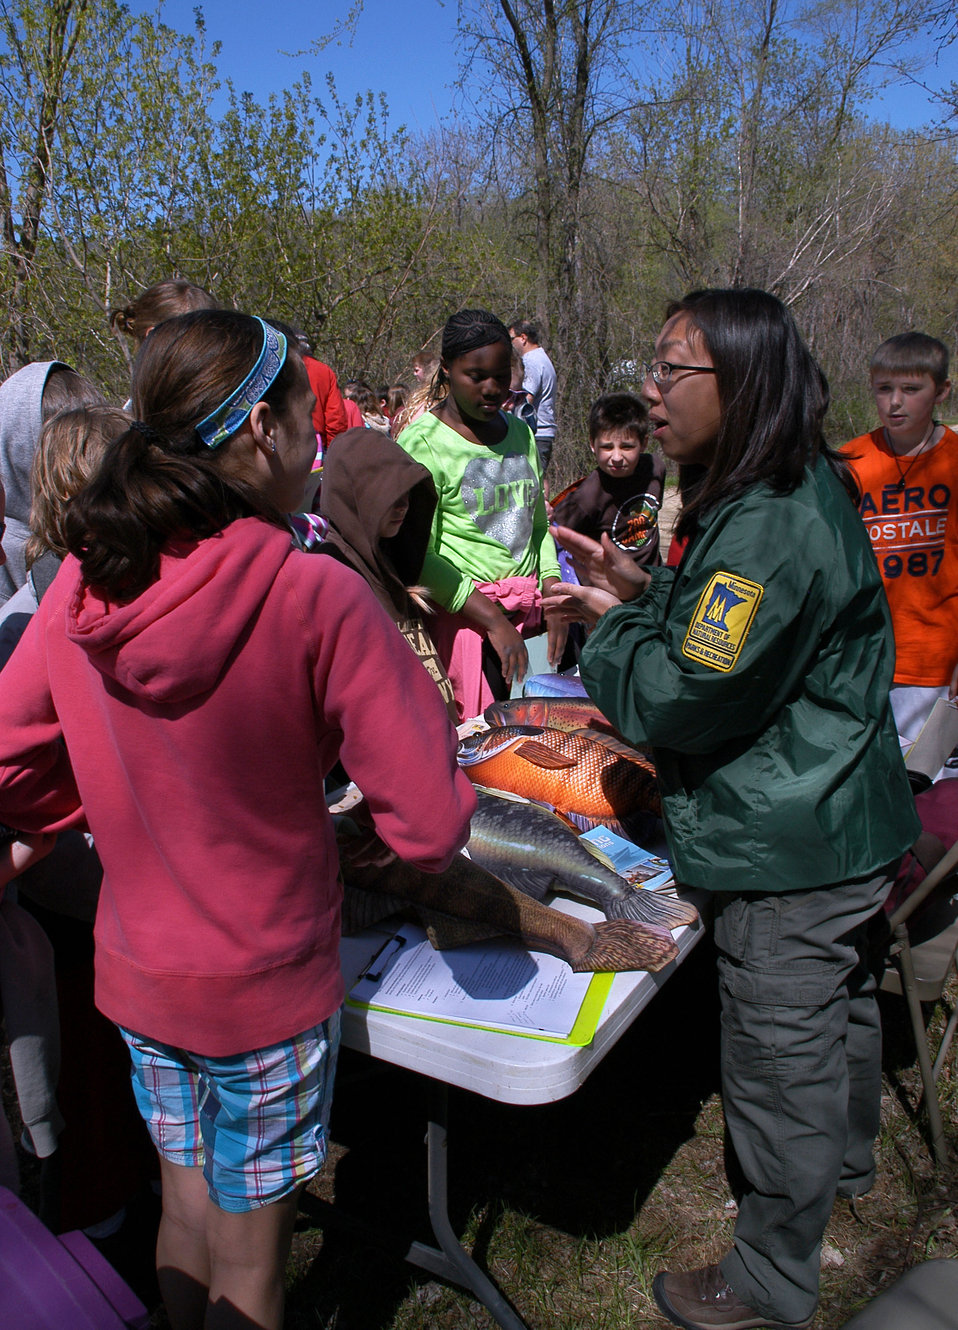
Environmental Interpreter, Krista Jensen, from the MN DNR taught Fish Identification

Students gathered around Krista Jensen, Environmental Interpreter from the MN DNR at Fort Snelling to learn about the various native fish found in Minnesota.